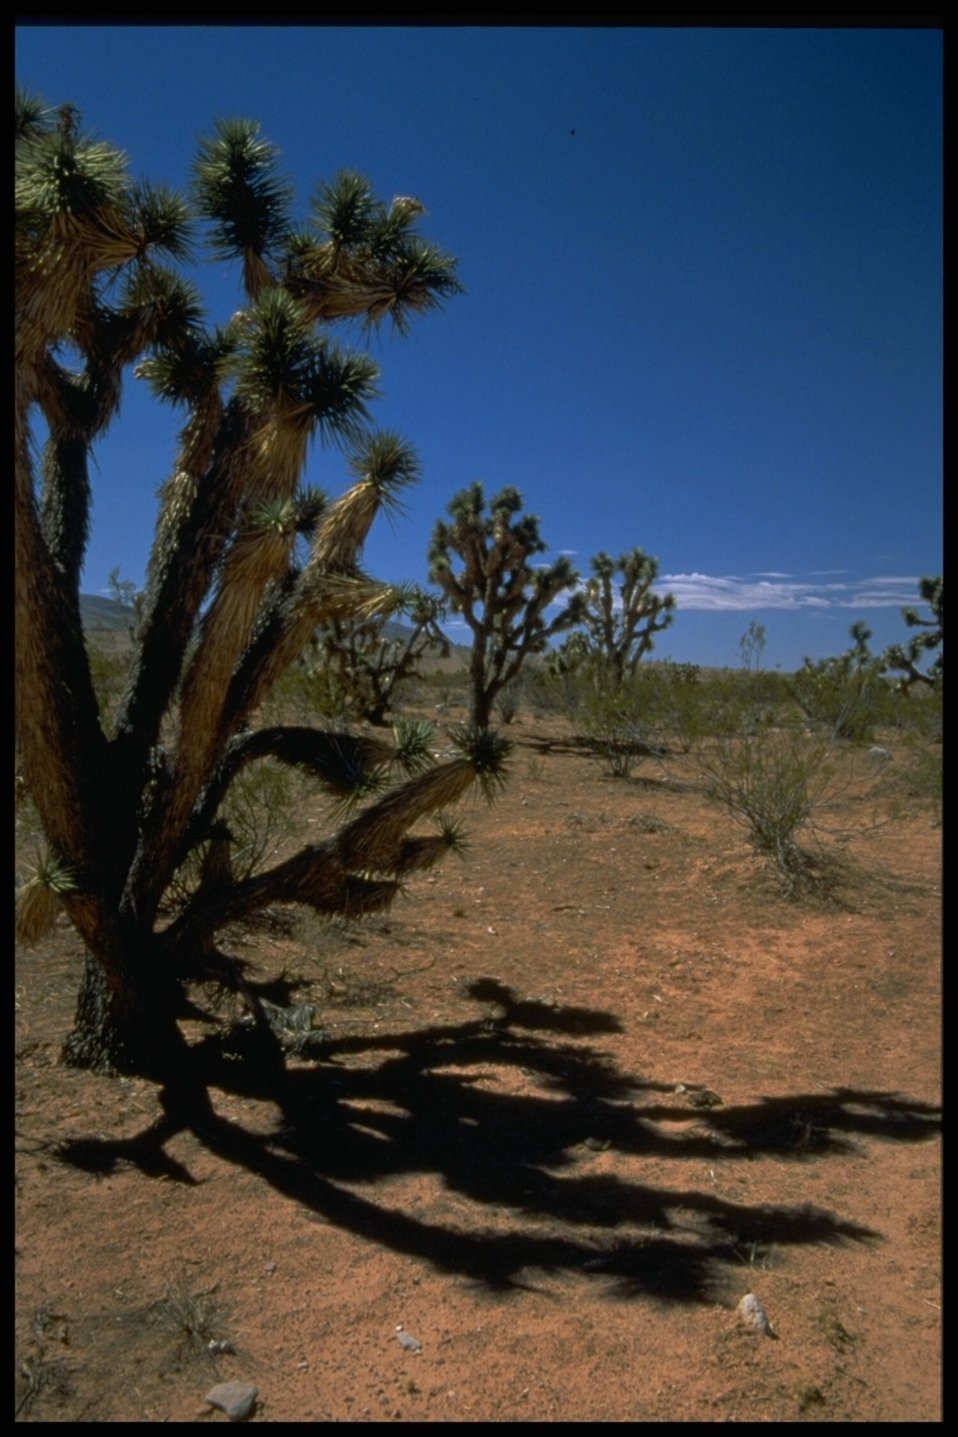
Cacti standing on its own at the Parashant National Monument.